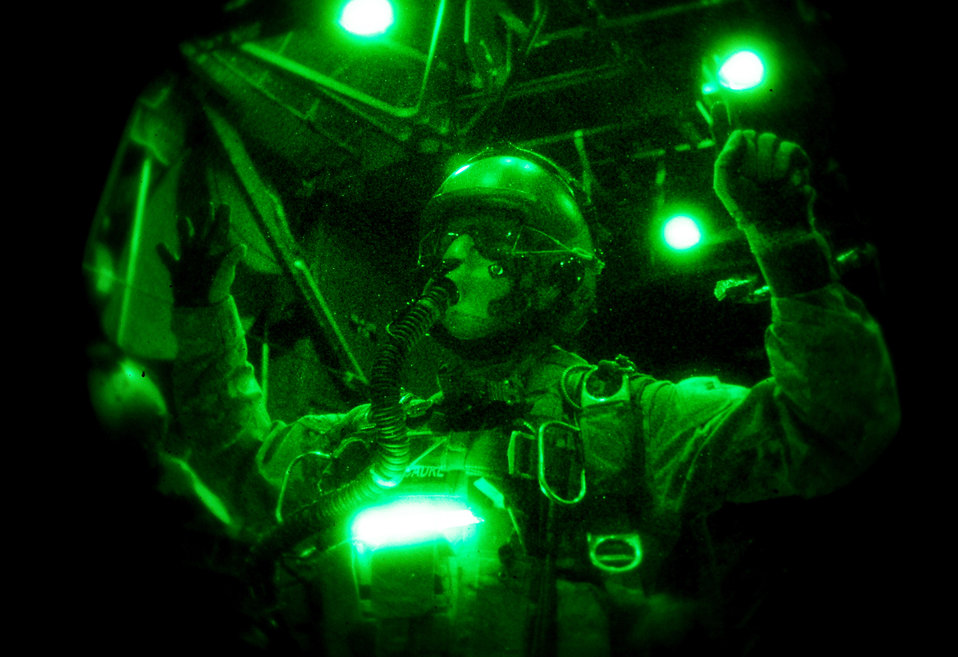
Special Tactics Airmen jump at night

A U.S. Air Force Special Tactics Training Squadron member prepares students during a high altitude, low opening or HALO, mission near Fort Walton Beach, Fla., March 16, 2010, during Exercise Emerald Warrior 2010. Military servicemembers participated in the 19-day joint training exercise, which provided participants realistic urban-warfare training scenarios at multiple sites along Florida's Gulf Coast.